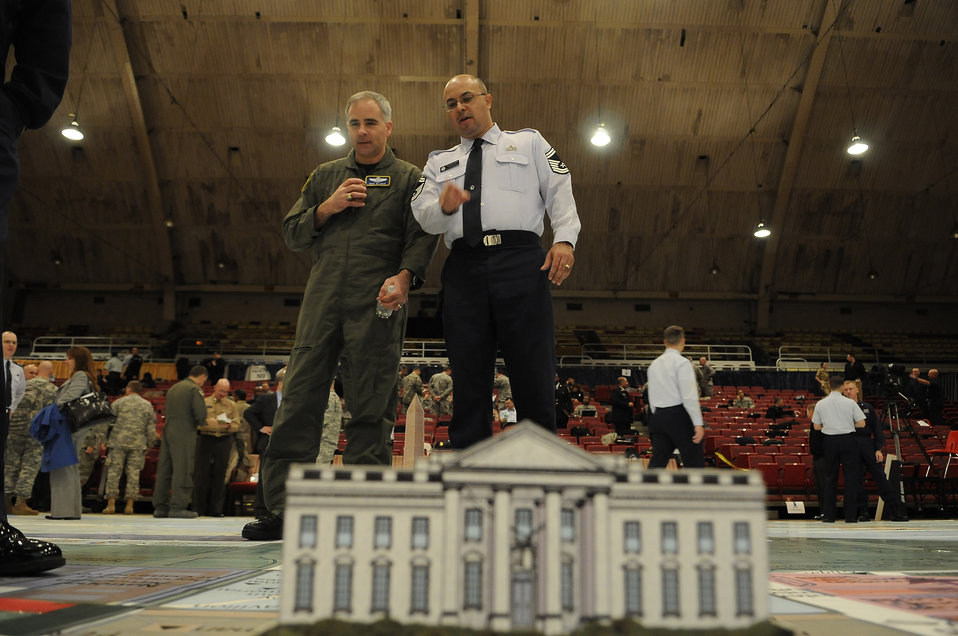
56th Armed Forces Inaugural Committee

Members of the Armed Forces Inaugural Committee participate in a large-scale map exercise Dec. 18 in Washington, D.C. AFIC carries on a tradition, which dates back more than 200 years, of honoring the new commander in chief and recognizing civilian control of the military. AFIC is a joint-service organization responsible for providing military ceremonial support to the 56th Inauguration Day, which will take place on Jan. 20.